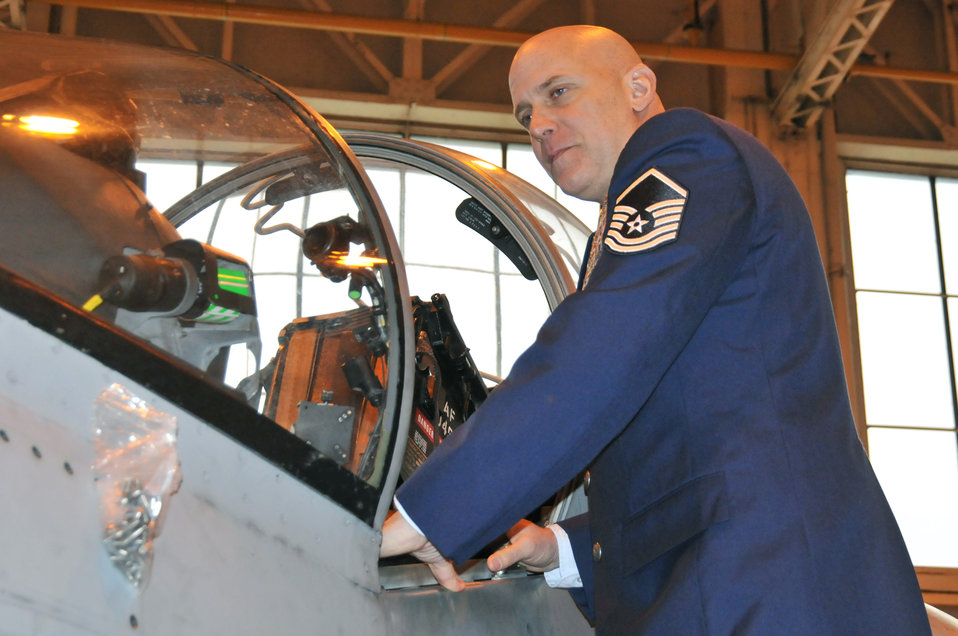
MSgt Distelweig

Master Sgt. Louis Distelsweig looks in the cockpit of a Harrier jet Jan. 11, 2011, at Royal Air Force Cottesmore, England. The aircraft was similar to ones his father, Capt. Louis Distelsweig Jr., flew during his time as an exchange pilot with the RAF in 1970.